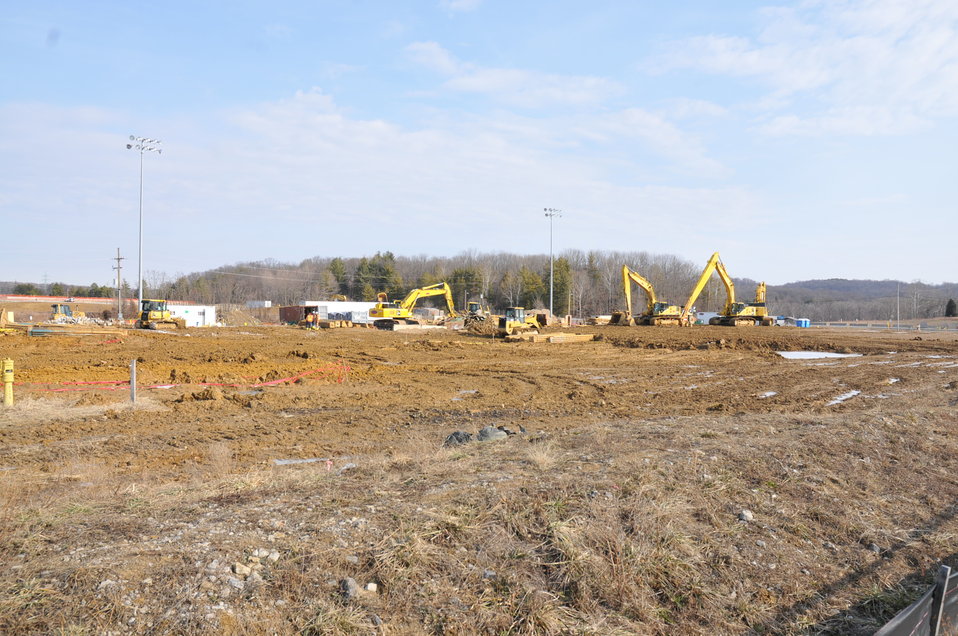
Portsmouth X-701B Soils Treatment Project

Final backfill operations are shown at the Portsmouth Site’s X-701B Soils Treatment Project.